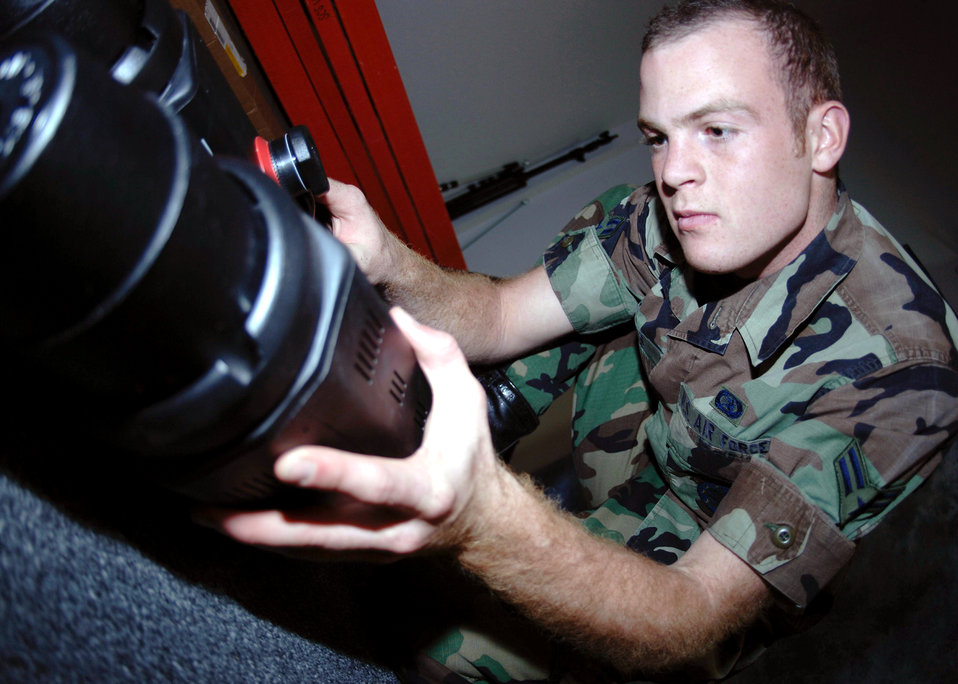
Setting up

DAVIS-MONTHAN AIR FORCE BASE, Ariz. (AFPN) -- Airman 1st Class Jesse Shipps puts together a light for the base photo lab studio. The lab installed a new lighting grid and lights to update the studio, which increases the quality of official portraits. Airman Shipps is a still photographer with the 355th Communications Squadron.